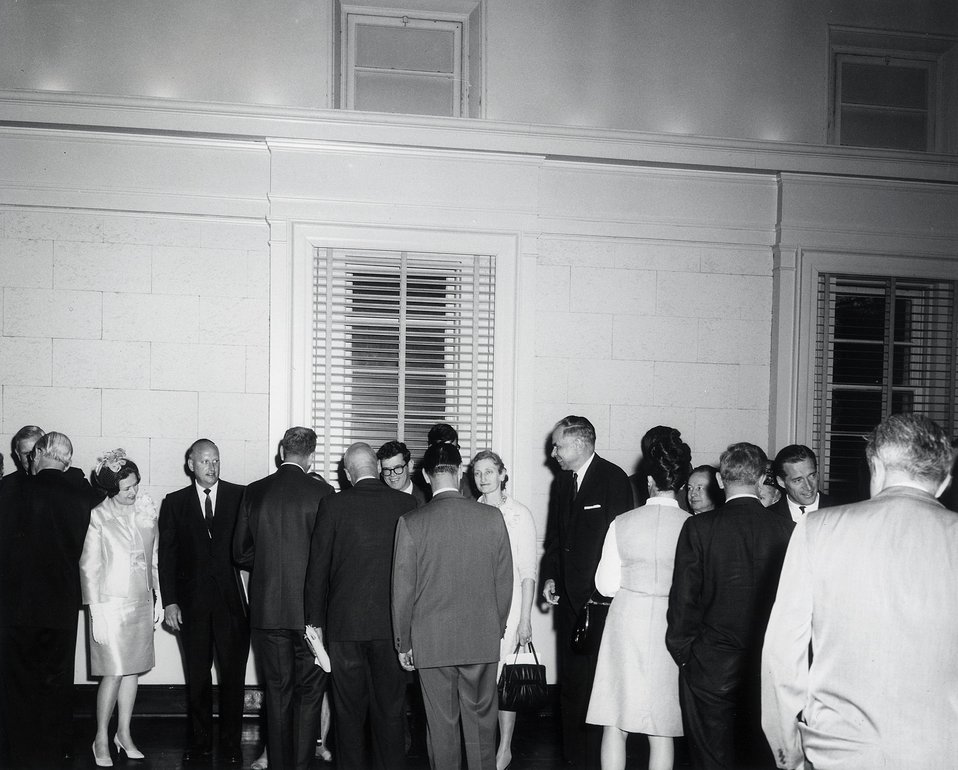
7th E.O. Lawrence Award Ceremony, April 27, 1966, Wash., D.C. Receiving Line at John Wesley Auditorium.